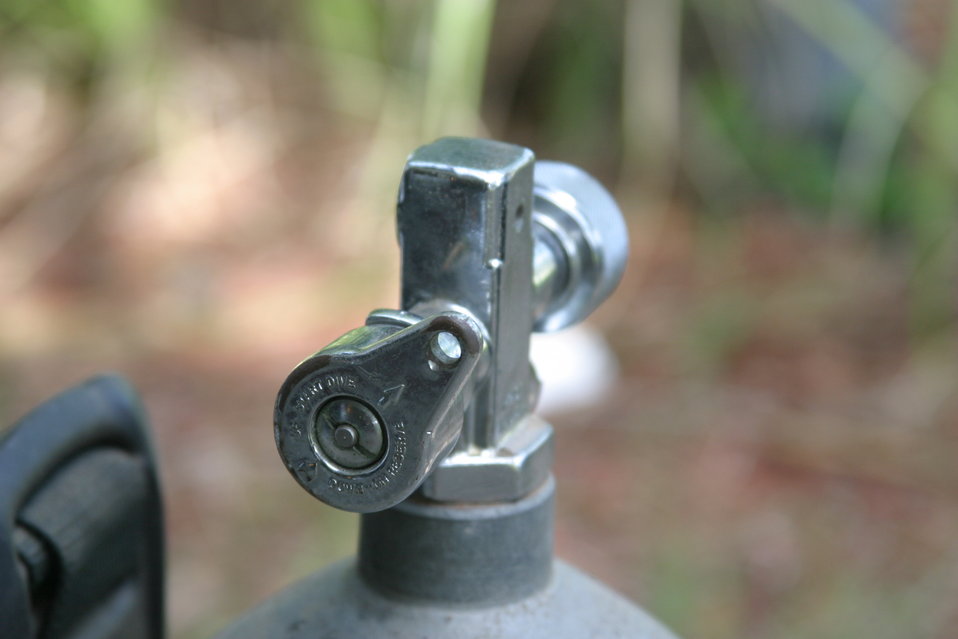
'J' Valve on Diving Cylinder from 1960